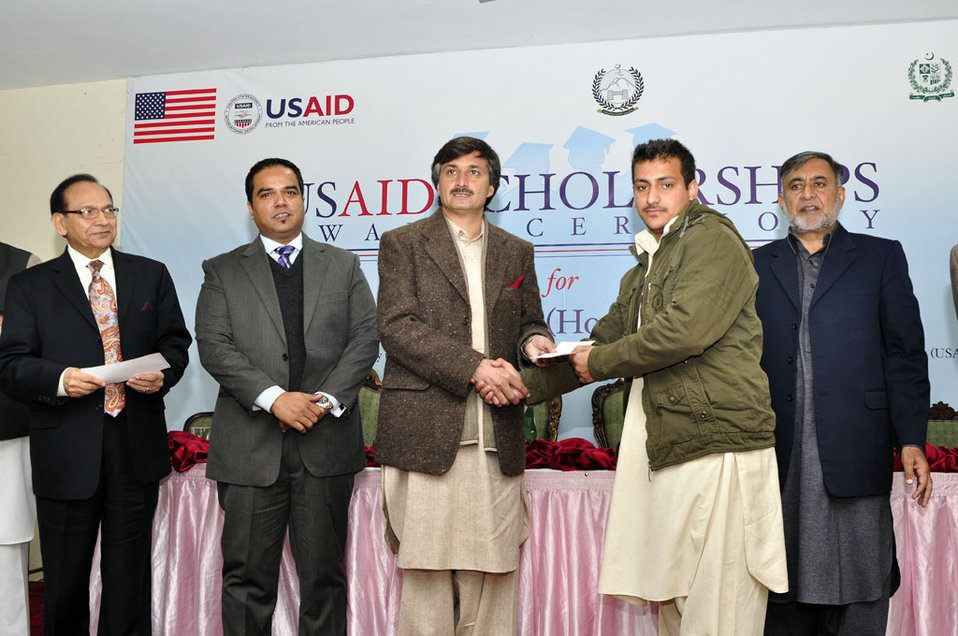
004: Peshawar, 27 Dec., 2011: USAID awarded scholarships to 44 Teacher Students from KP through its Pre-Service Teacher Education Program (Pre-STEP).

Provincial Minister for Elementary & Secondary Education Mr. Sardar Hussain Babak handing over the Scholarship document to a teacher student from Khyber Pakhtunkhwa (Center). Others present are L to R: Dr. Mahmoodul Hassan Butt, Chief of Party, USAID Pre-STEP; Mr. Muhammad Tariq Khan, Senior Education Advisor, U.S. Agency for International Development (USAID); Mr. Attaullah Khan, Director Curriculum, Government of Khyber Pakhtunkhwa.